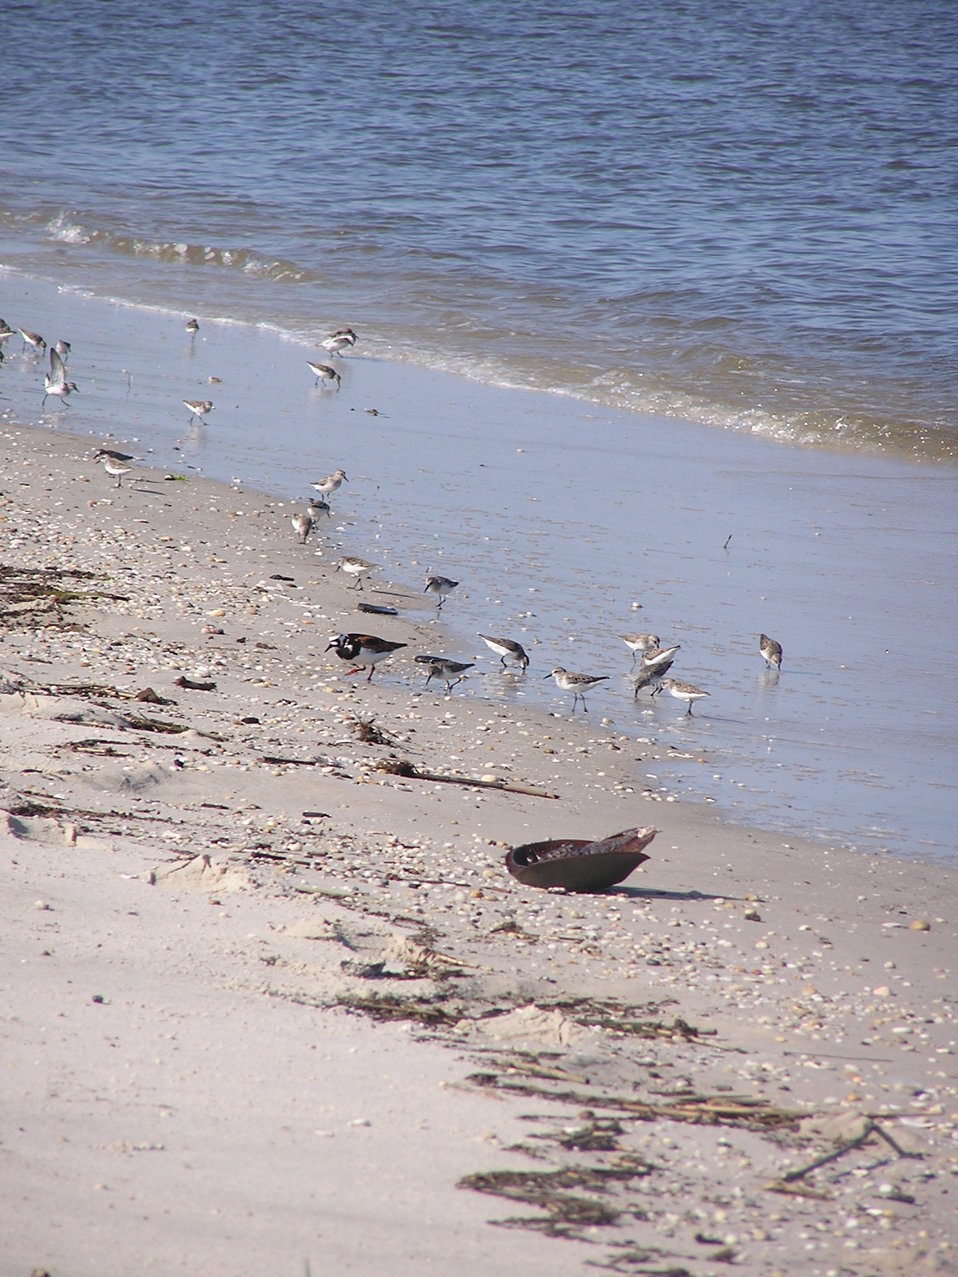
Shorebirds at Cape May National Wildlife Refuge.